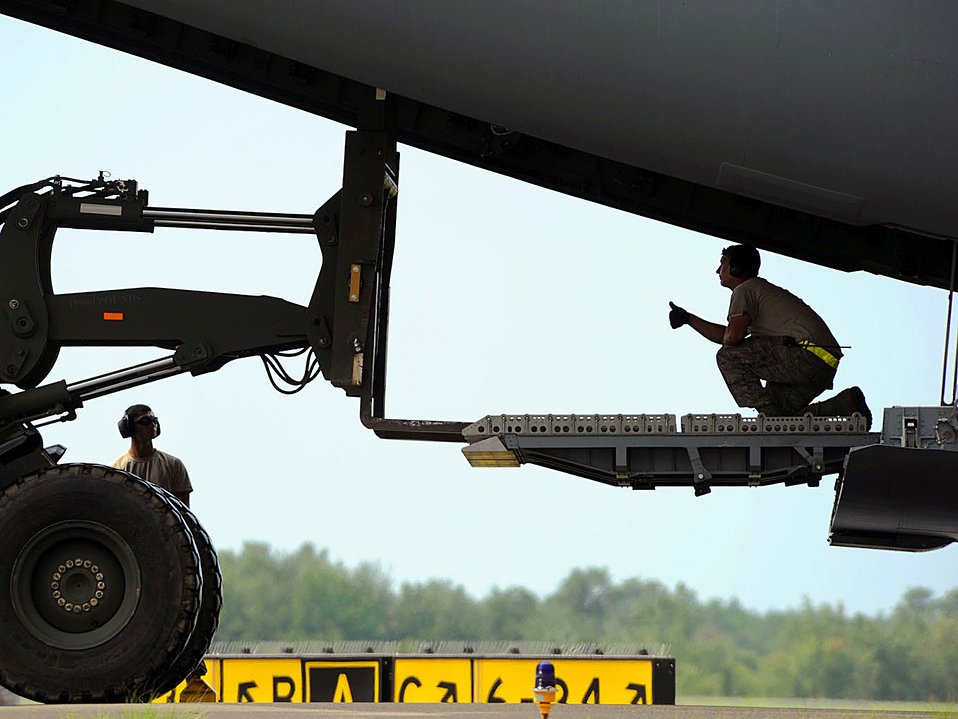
Load Up

Airmen prepare to unload cargo from a C-17 Globemaster III Aug. 18, 2011, at Joint Base McGuire-Dix-Lakehurst, N.J., during Exercise Eagle Flag. The exercise is designed for developing, testing and rehearsing the expeditionary combat support capabilities of a traditional air base opening.